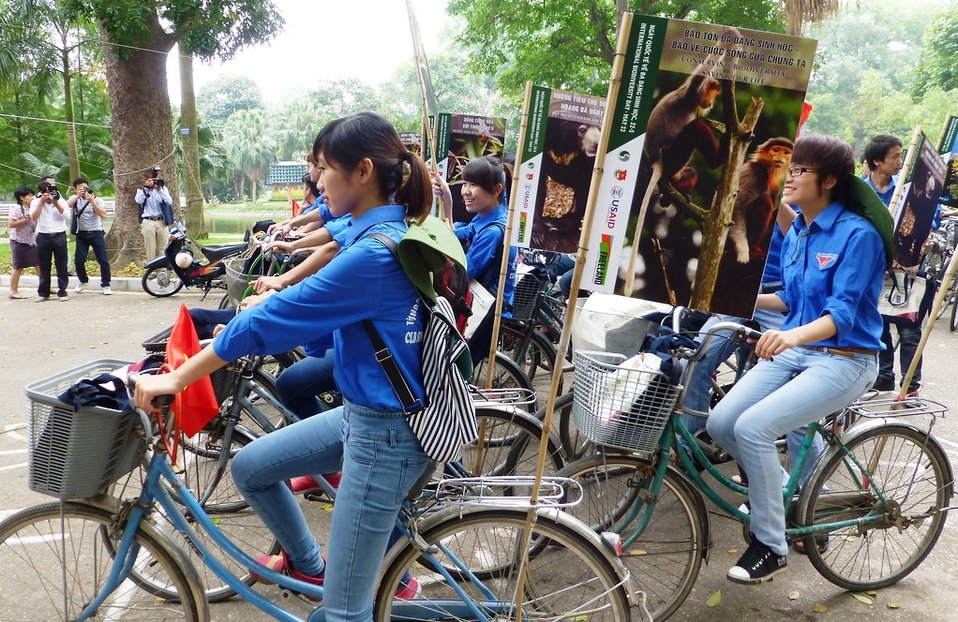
USAID Supports International Day for Biological Diversity in Hanoi